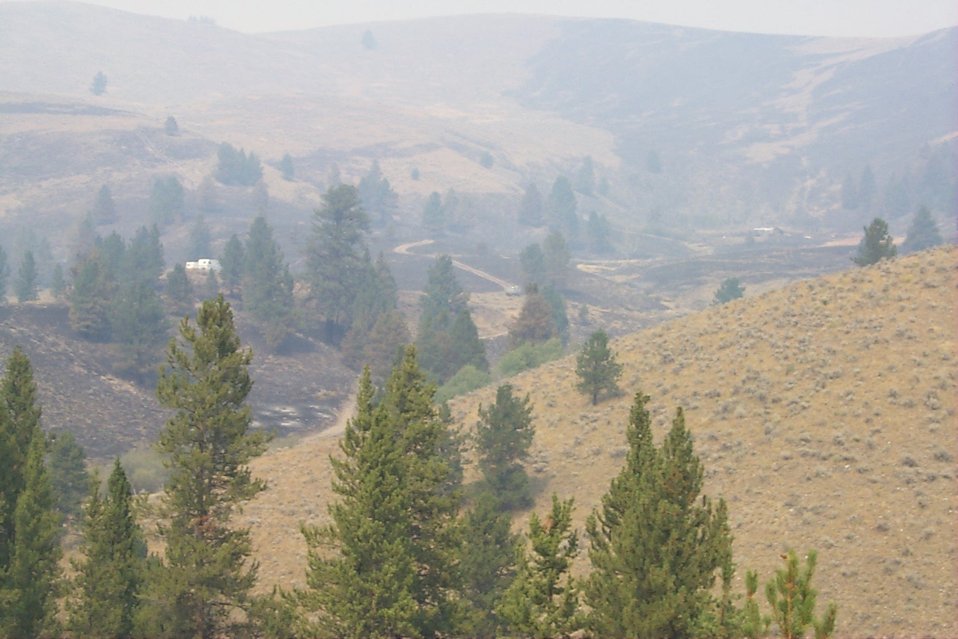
Burn area Fire Clearwater Fire Salmon Field Office USRD Upper Snake River District